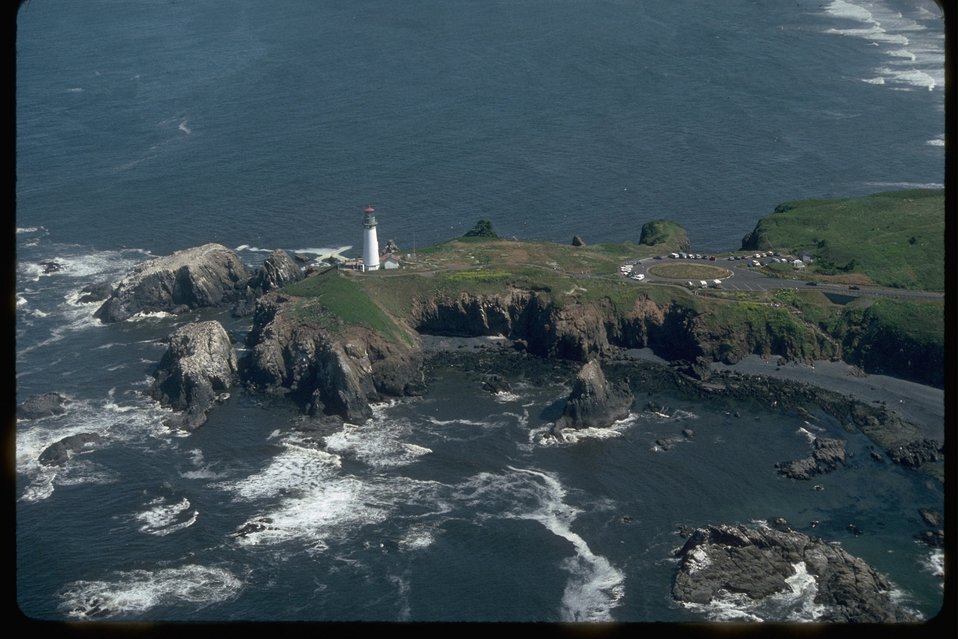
Aerial view of Yaquina Head lighthouse and parking area.